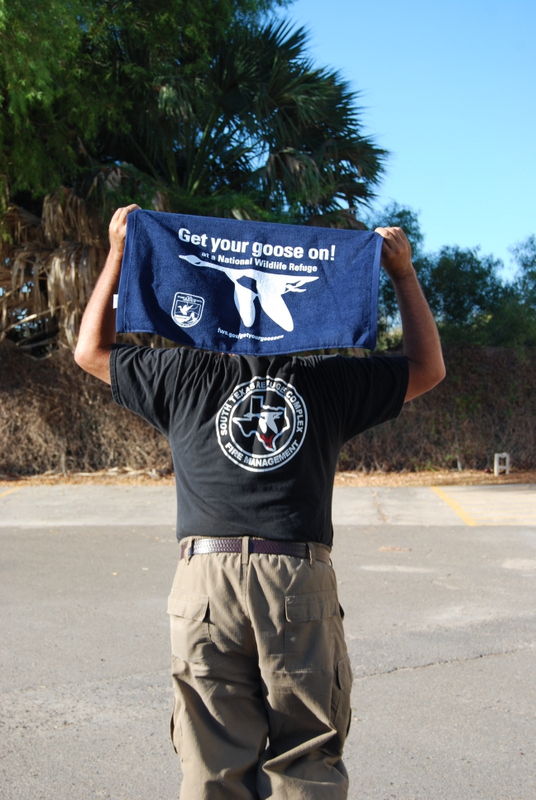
Get Your Goose On!